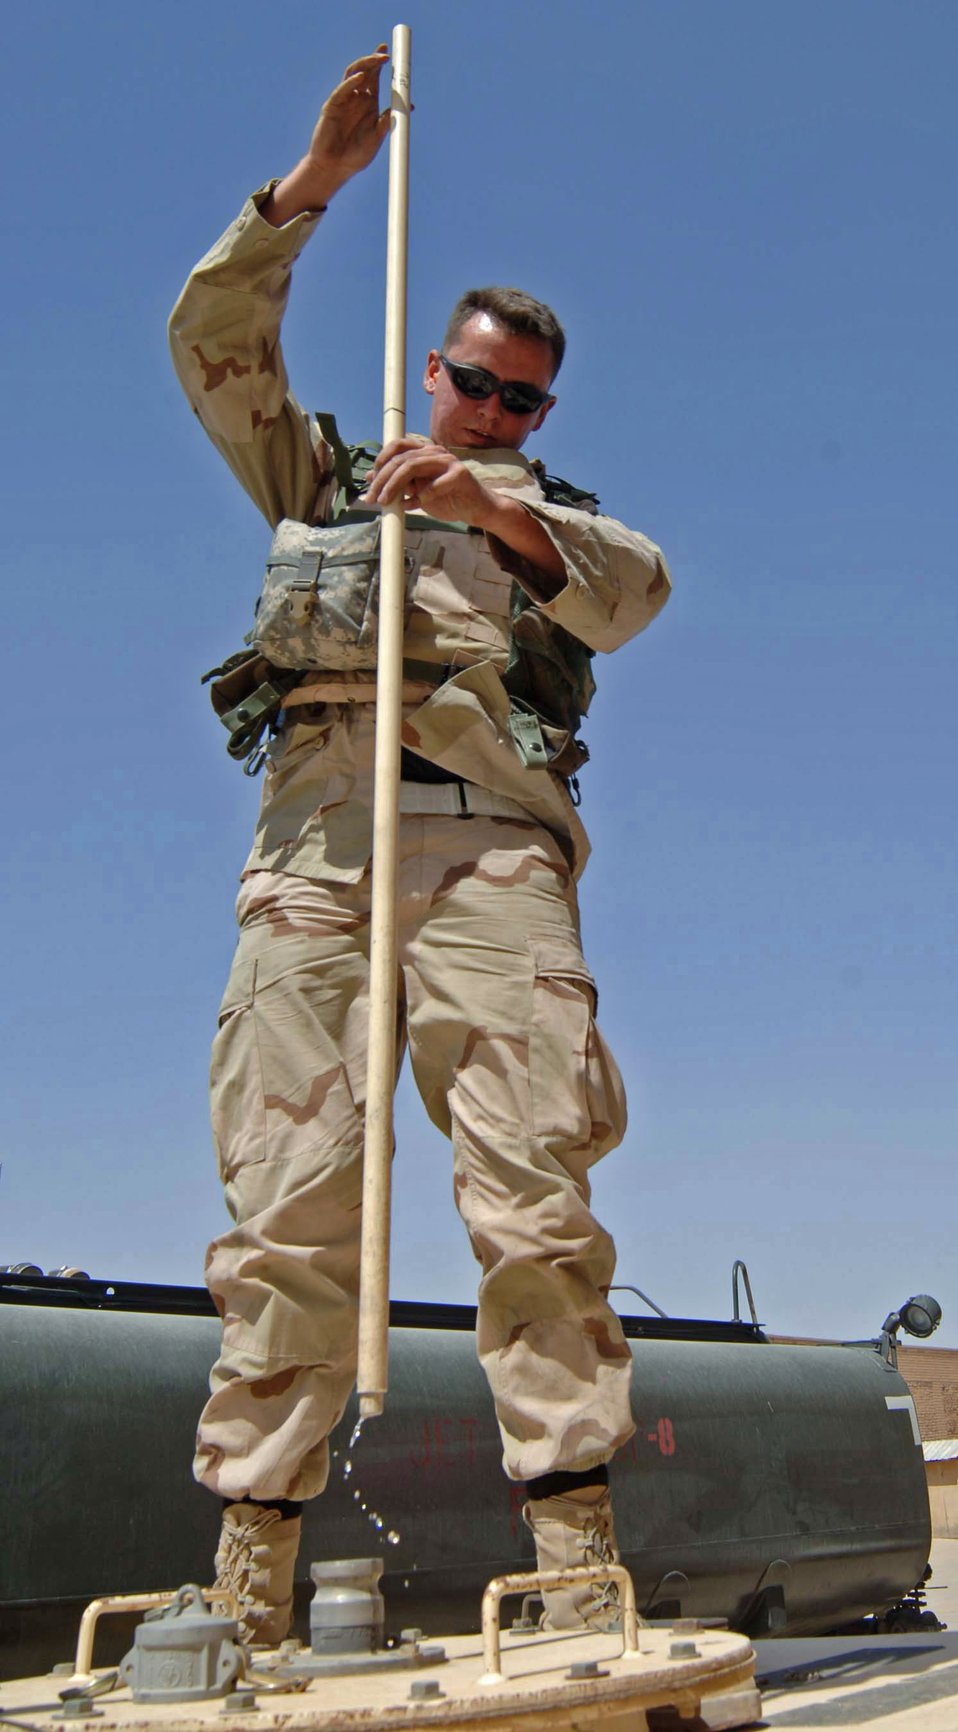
Fuels Airmen trains Iraqis on fuel delivery

Senior Airman Chris Macfadden, a fuel distribution technician, checks the fuel level June 14 in a generator that supplies electrical power to the units at Baghdad International Airport, Iraq. Airman Macfadden is assigned to the 447th Expeditionary Logistics Readiness Squadron at Sather Air Base, Iraq.